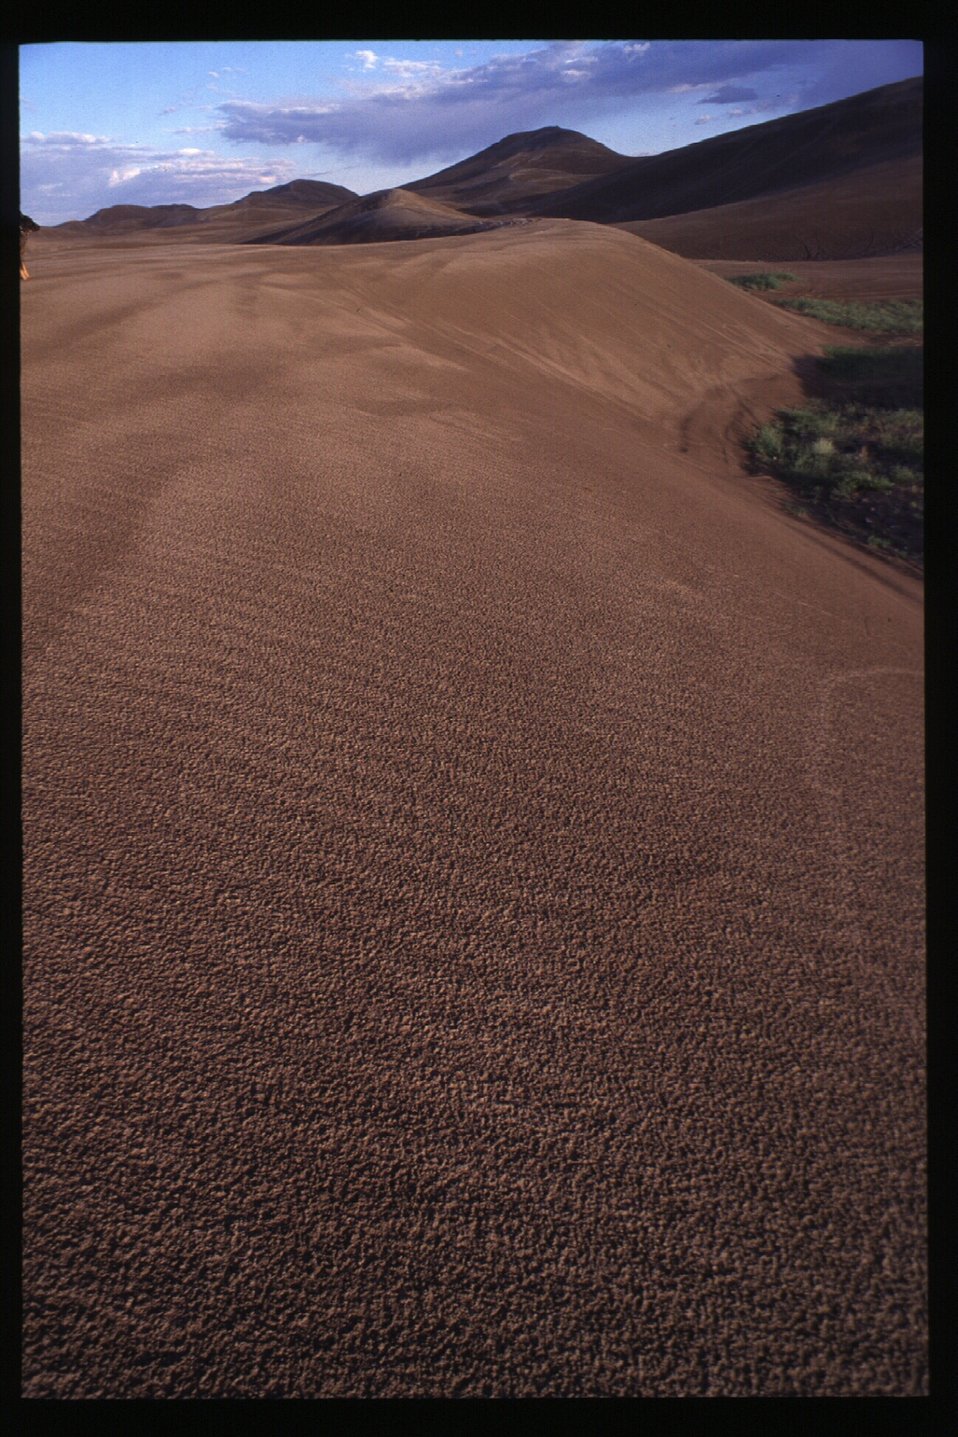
Recreation St Anthony Sand Dunes Off Highway Vehicles Idaho Falls Field Office USRD Upper Snake River District